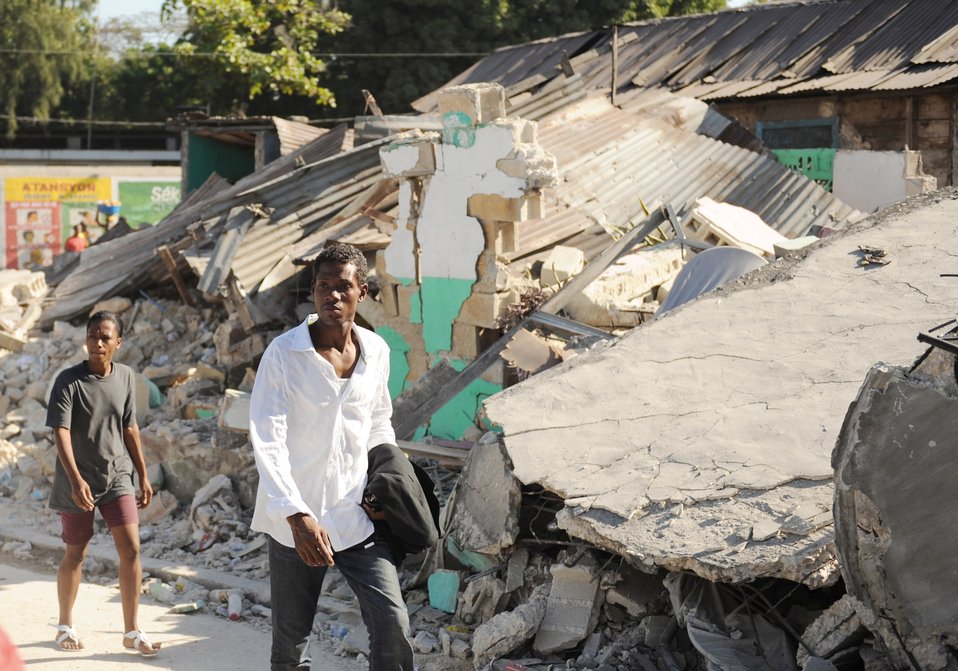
Haiti Earthquake Relief

Haitians walk past rubble Jan. 17, 2010, in Port-au-Prince, Haiti following a magnitude 7 earthquake that hit the city on Jan. 12, 2010. Department of Defense assets have been dispatched to Haiti to assist with humanitarian assistance and disaster relief.